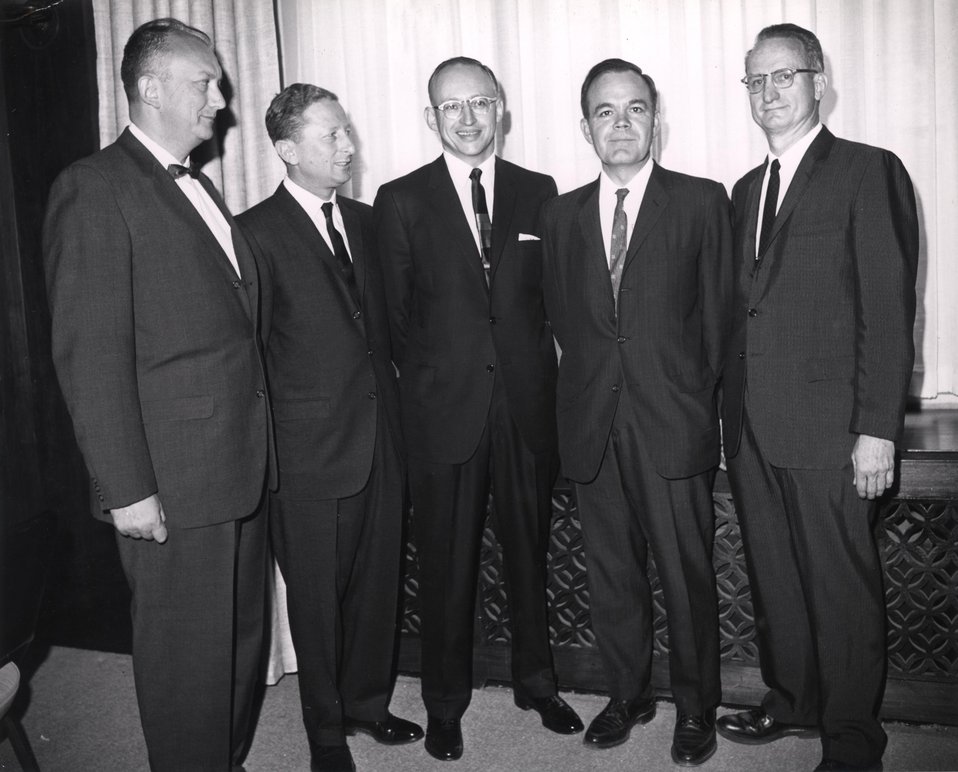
Lawrence Award Ceremony, 1963. Kouts, Tobias, Rosen, Taub, Rainwater and Seaborg.